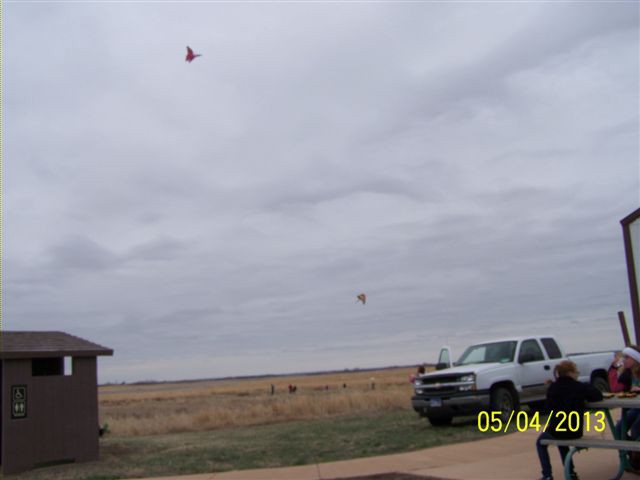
May Nature Fun Day 2013

More kite flying.